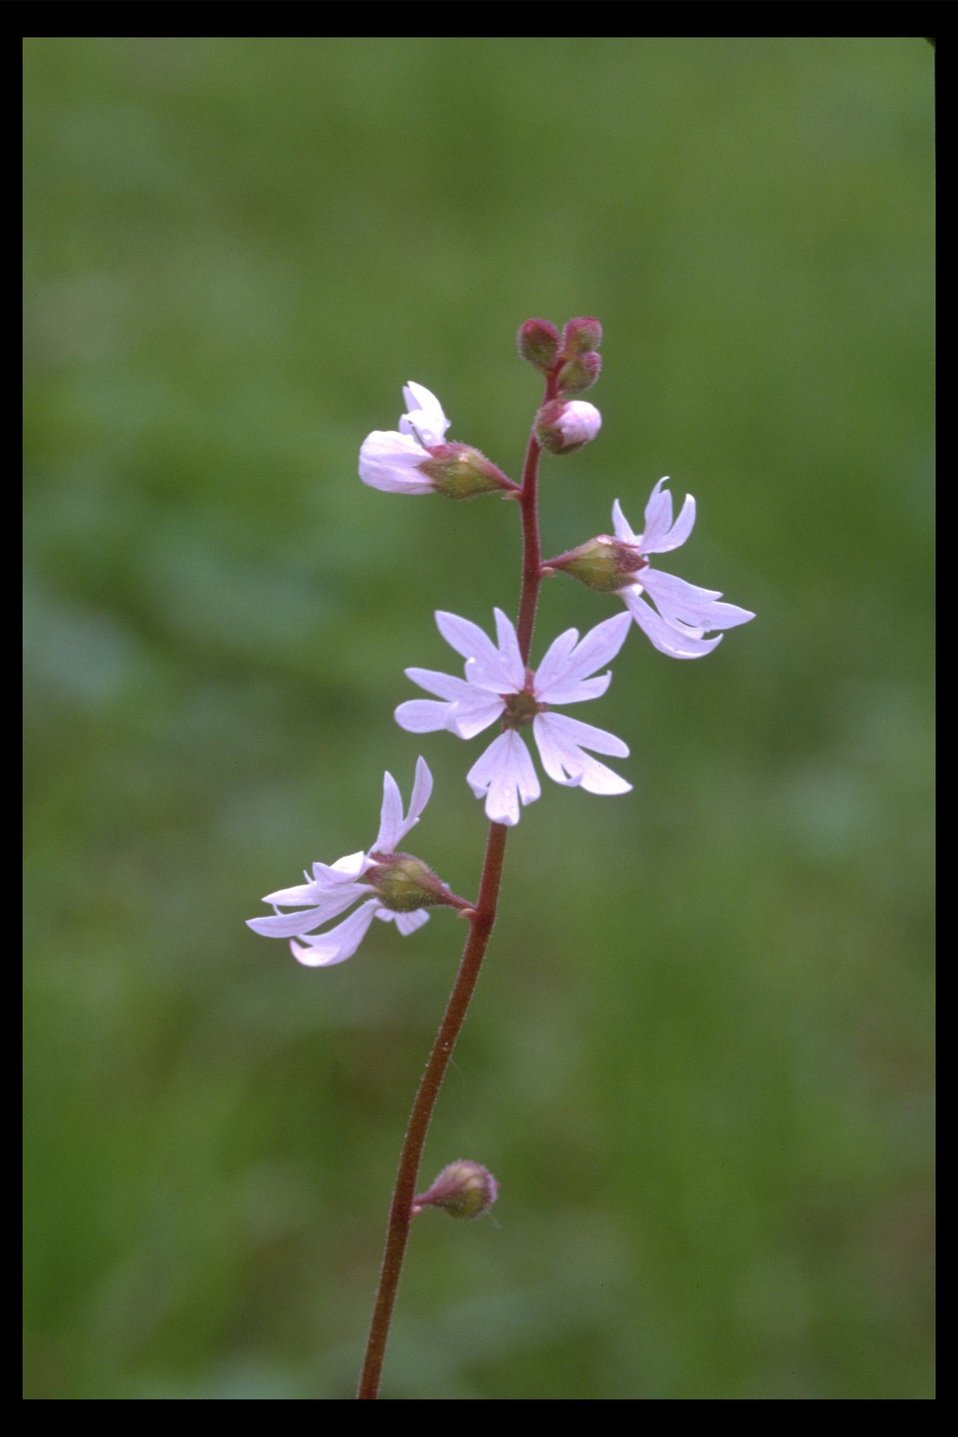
Prairie Star (Lithophragma parviflorum) found at Shady Cove.